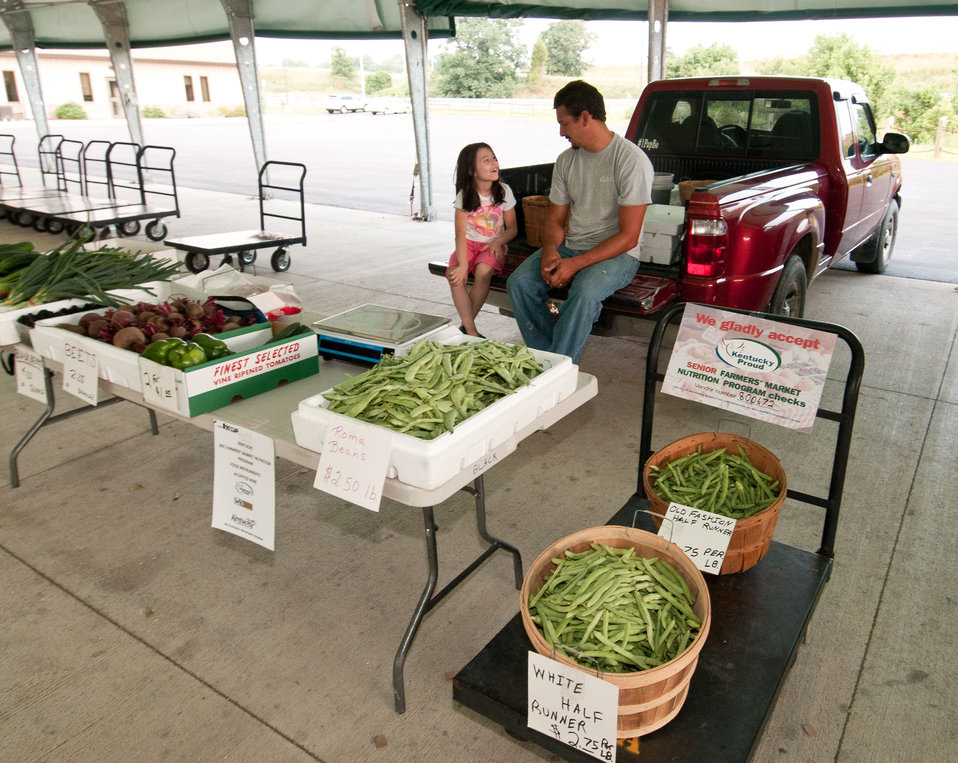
Doug Black (right) and daughter Kaylee (7) picked three varieties of heirloom beans this morning and sold them at the Bath County Agricultural Education and Marketing Center, Owingsville, KY, on Friday, July 15, 2011. They are certified to receive Senior Farmer's Market Nutrition Program checks from customers. The Center was the recipient of a $400,000 Rural Business Enterprise Grant. It has given farmers and producers from Bath and surrounding counties the opportunity to manufacture and market their locally grown and locally produced value-added and “Kentucky Proud” branded products, including but not limited to, fresh produce, artisan crafts and specialty food products. The Center is open year-round and allow residents to sell products in four different retail categories, including Kentucky products, regional crafts, “green” groceries and bakery/deli. Several producers expressed their gratitude for Rural Development’s assistance in making the center a reality. The project was made possible through American Recovery and Reinvestment Act of 2009 funding enacted by the 111th United States Congress in February 2009 and signed into law on February 17, 2009, by President Barack Obama.